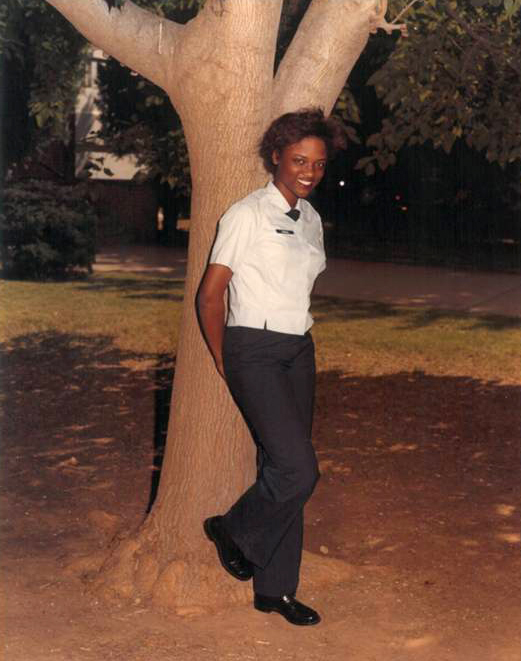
Yvadne Robinson, an Assistant in International Affairs, served in the Air Force from 1981 to 2005 in England, Italy, Germany, Texas, Ohio and Virginia. She attained the rank of Technical Sergeant.